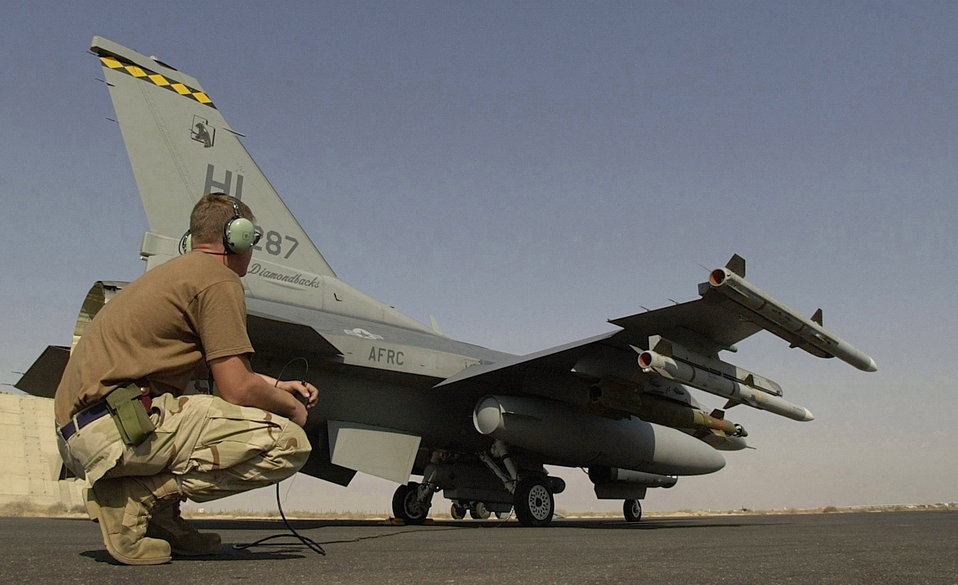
Mission ready

OPERATION SOUTHERN WATCH -- Senior Airman Gaylon Hoebelheinrich, a crew chief from the 93rd Fighter Squadron at Homestead Air Force Base, Fla., prepares to guide out an F-16 Fighting Falcon on a mission in support of Operation Southern Watch. The F-16 is the Air Force’s only single seat multirole combat aircraft.